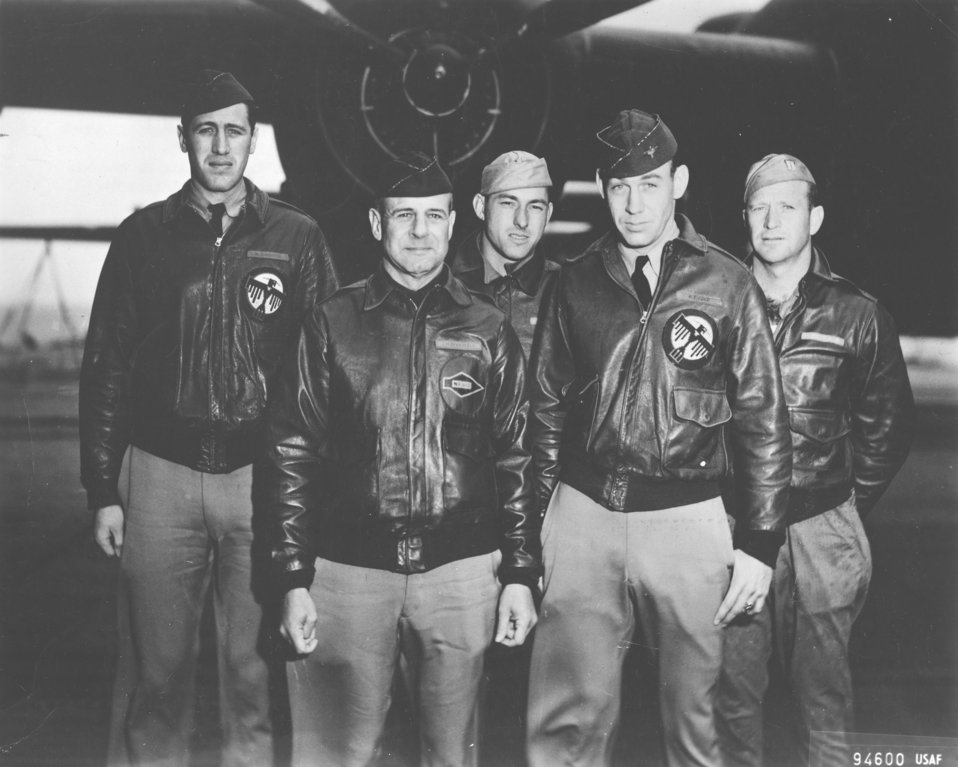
Doolittle Tokyo Raiders, Crew No. 1

Crew No. 1 (Plane #40-2344, target Tokyo): 34th Bombardment Squadron, front row: Lt. Col. James H. Doolittle, pilot; Lt. Richard E. Cole, copilot; back row: Lt. Henry A. Potter, navigator; Staff Sgt. Fred A. Braemer, bombardier; and Staff Sgt. Paul J. Leonard, flight engineer/gunner.